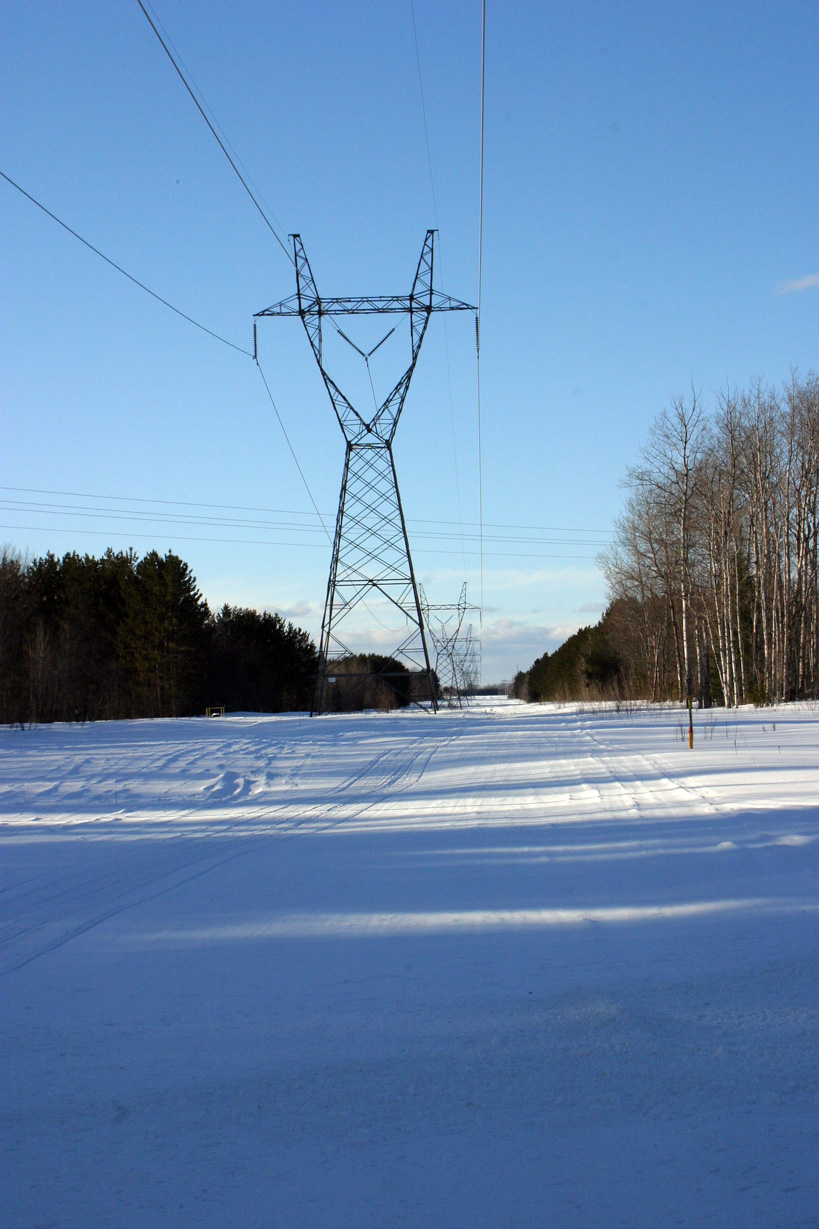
Power lines in Gaylord, Michigan.